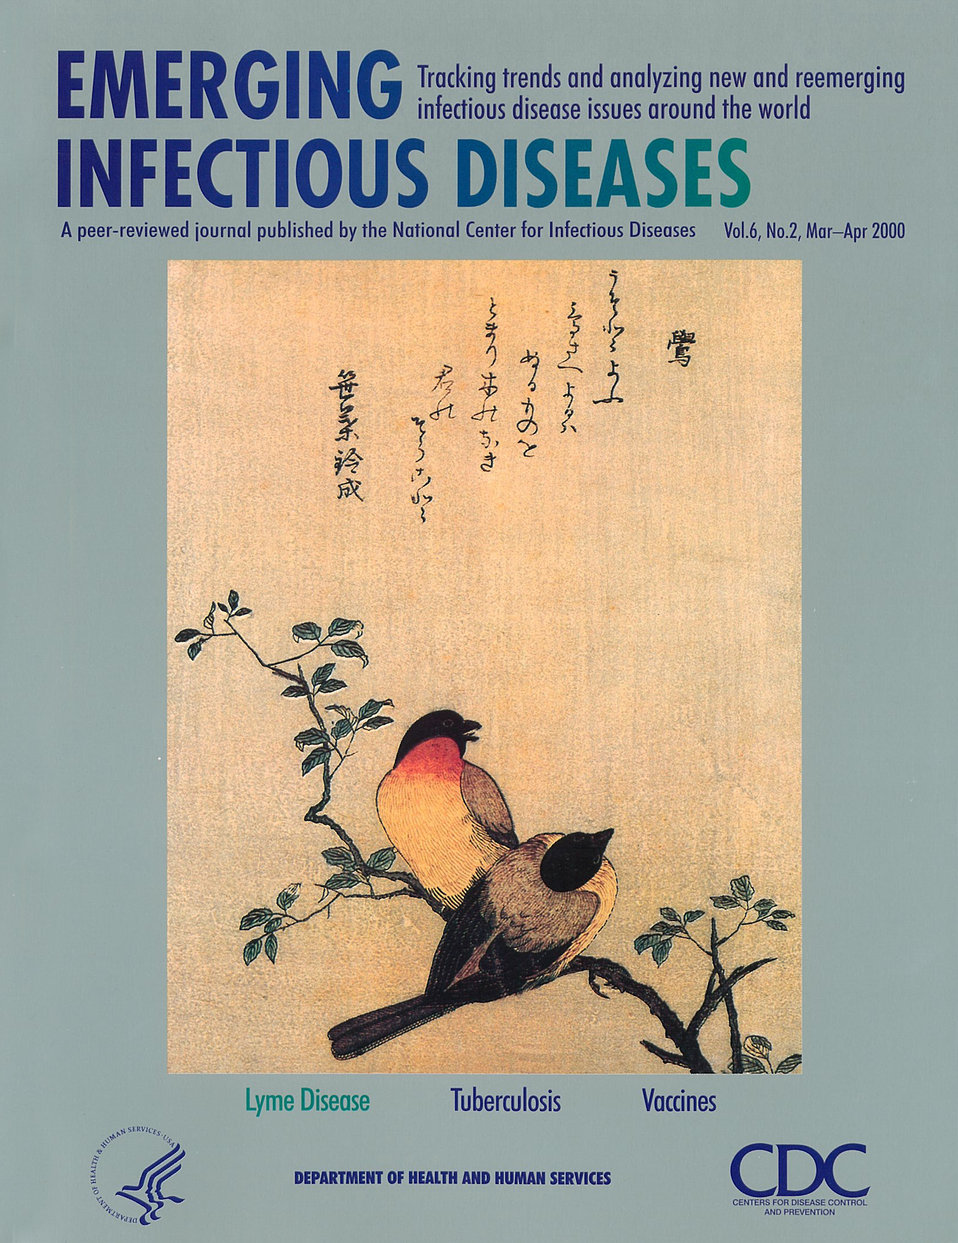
Emerging Infectious Diseases (EID) cover artwork for Volume 6, Number 2, March-April 2000 issue.